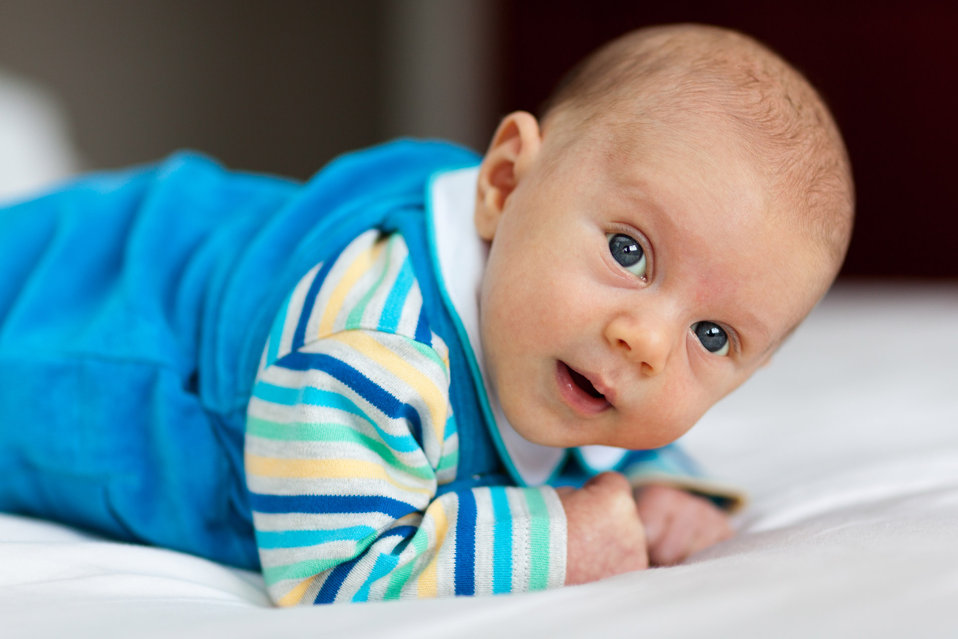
Baby lying on a belly

Baby boy lying on his belly.